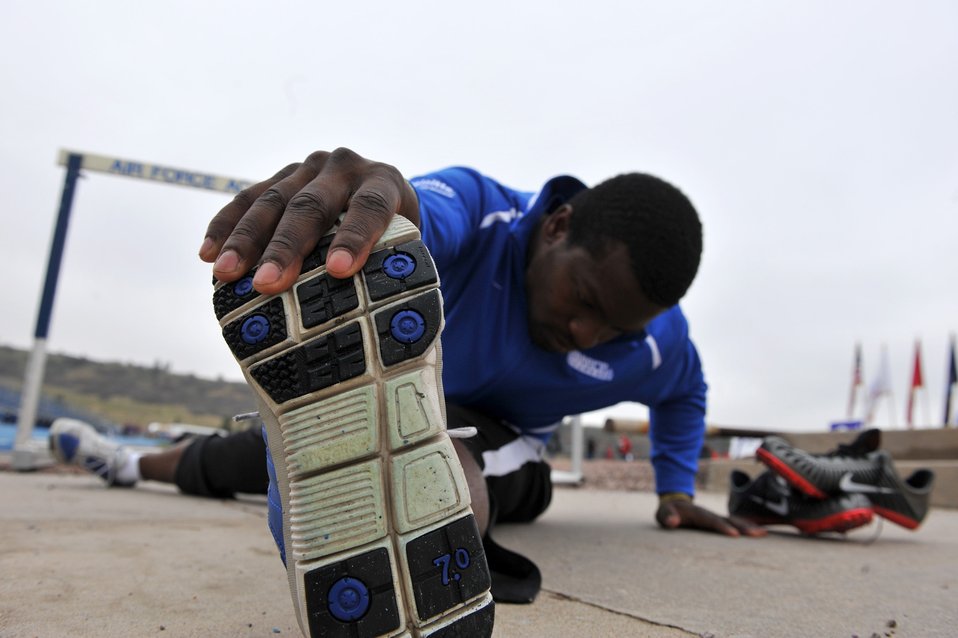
Warrior Games AF track and field

Air Force team member Matt Sanders stretches before his track events during the Warrior Games at the U.S. Air Force Academy track in Colorado Springs, Colo., May 14, 2010. Sanders led the Air Force track and field team with three medals, earning a gold in the 400-meter and the 200-meter races and a silver in the 100-meter sprint.